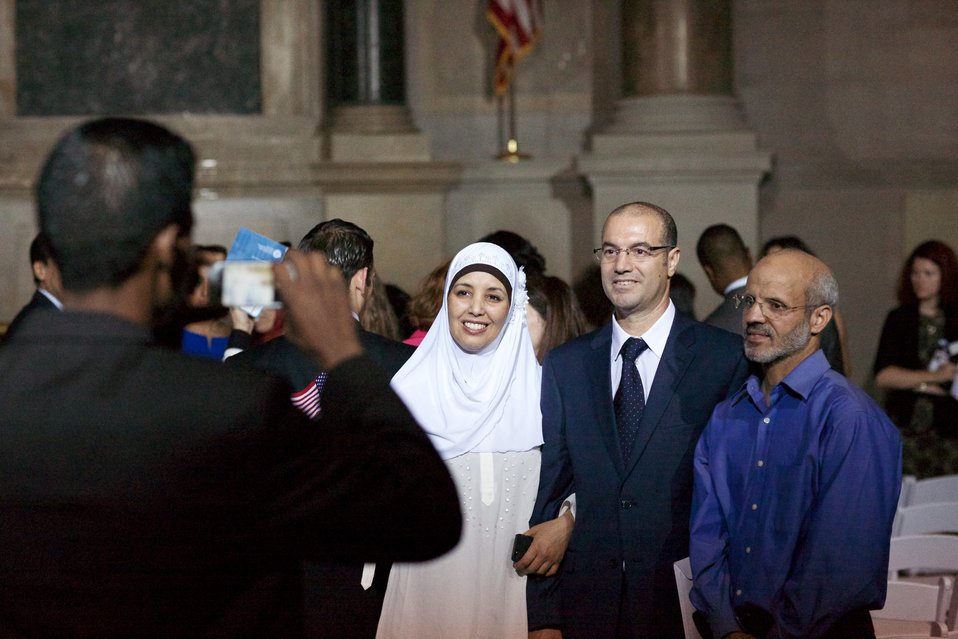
Naturalization Ceremony with Michelle Obama